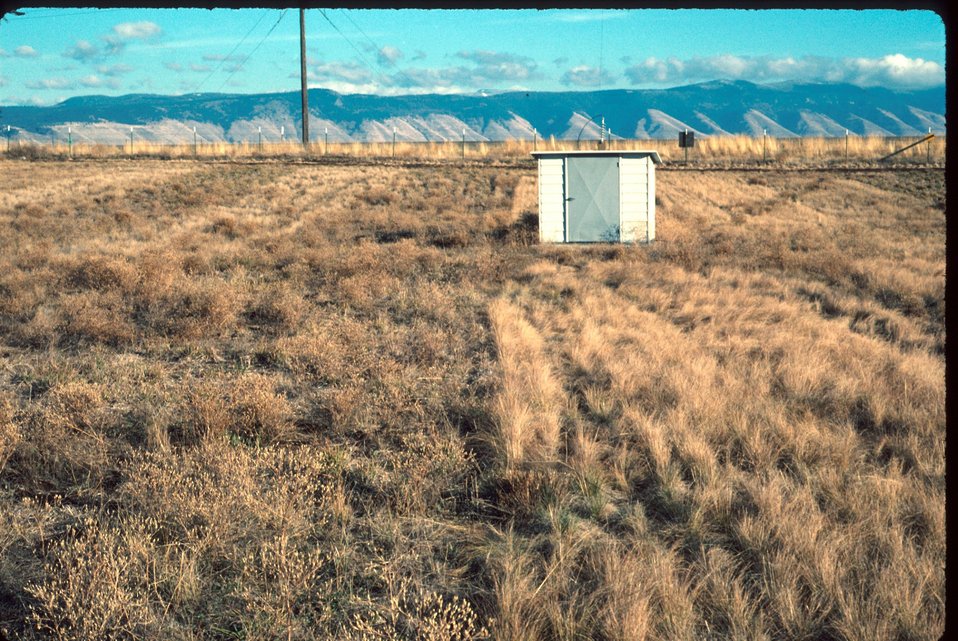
Nativegrasses out competing Diffuse Knapweed grasses, noxious weeds